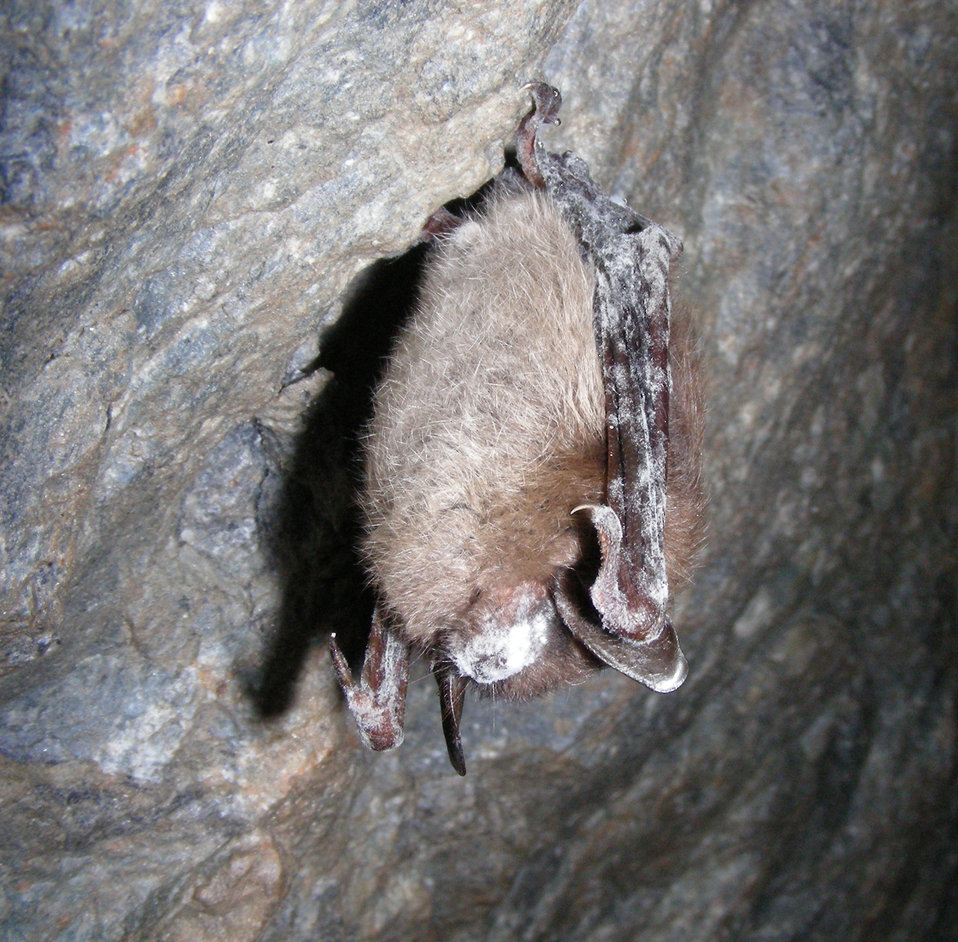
Bat showing symptoms of White-nose Syndrome

Little brown bat with white-nose syndrome in Greeley Mine, Vermont, March 26, 2009